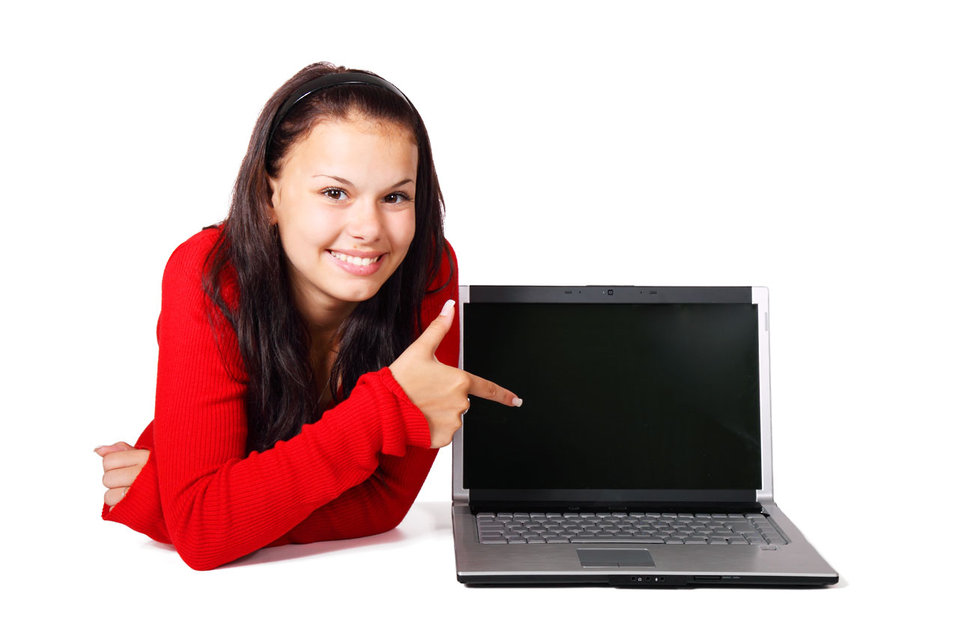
Woman pointing at laptop

Young woman pointing at computer isolated on white background.